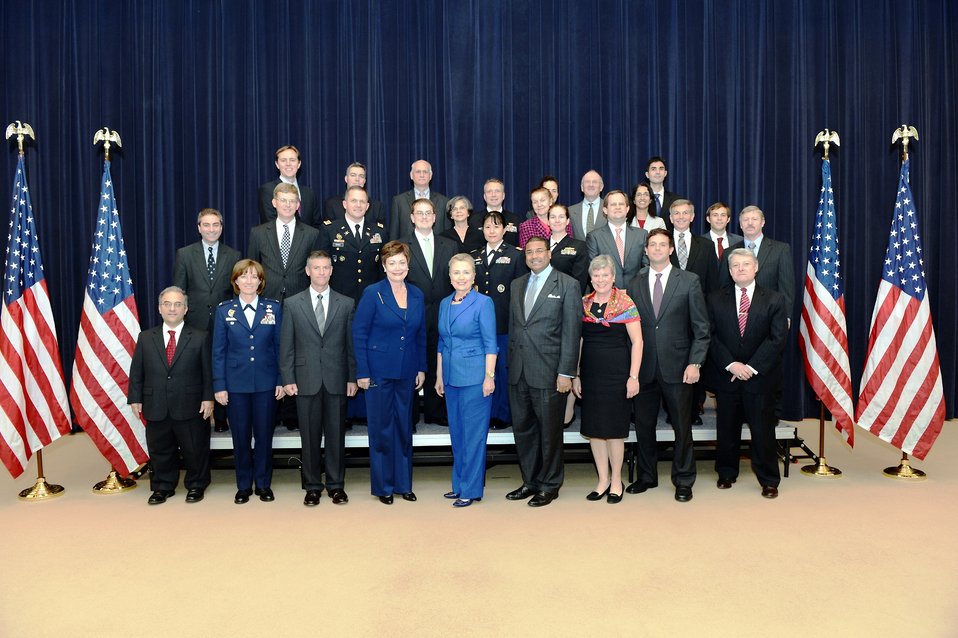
Secretary Clinton, Acting Under Secretary Gottemoeller, Deputy Assistant Secretary Rose, and Former Under Secretary Tauscher Honor the EPAA Negotiations Delegation and Key Contributors Across the U.S. Government Interagency

U.S. Secretary of State Hillary Rodham Clinton, Acting Under Secretary of State for Arms Control and International Security Rose Gottemoeller, Deputy Assistant Secretary of State for Space and Defense Policy Frank Rose, and Former Under Secretary of State for Arms Control and International Security Ellen Tauscher attend an awards ceremony honoring the European Phased Adaptive Approach (EPAA) Negotiations Delegation and Key Contributors across the U.S. Government interagency at the U.S. Department of State in Washington, D.C., October 2012.